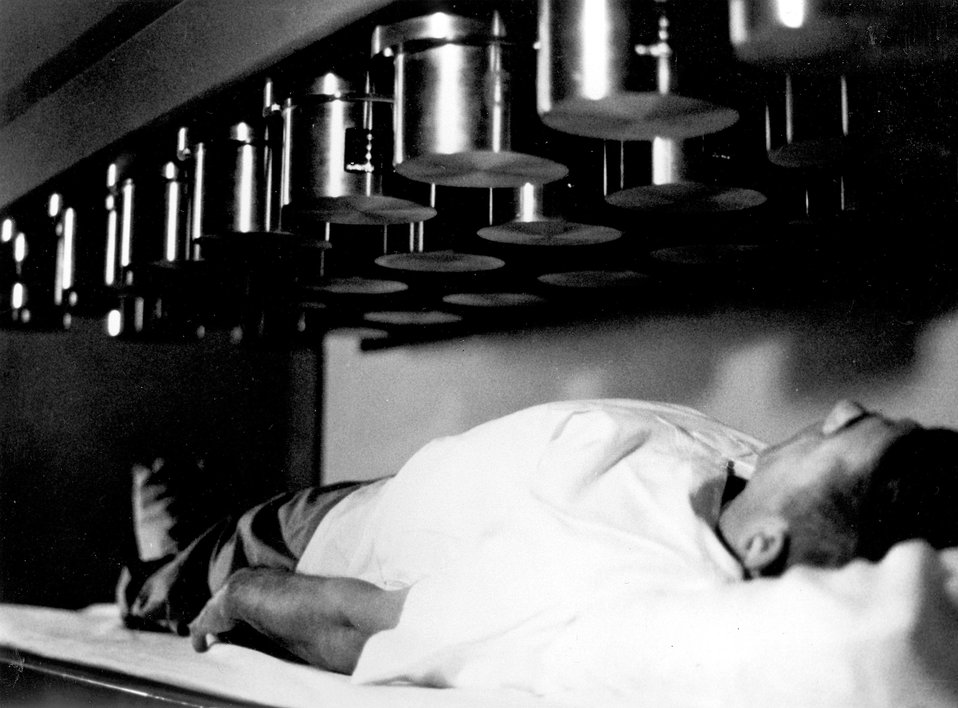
Fifty-four sodium iodide crystals make up the two detector grids. The whole body counter uses in vivo neutron activation analysis by means of gamma measurements.
c.1971